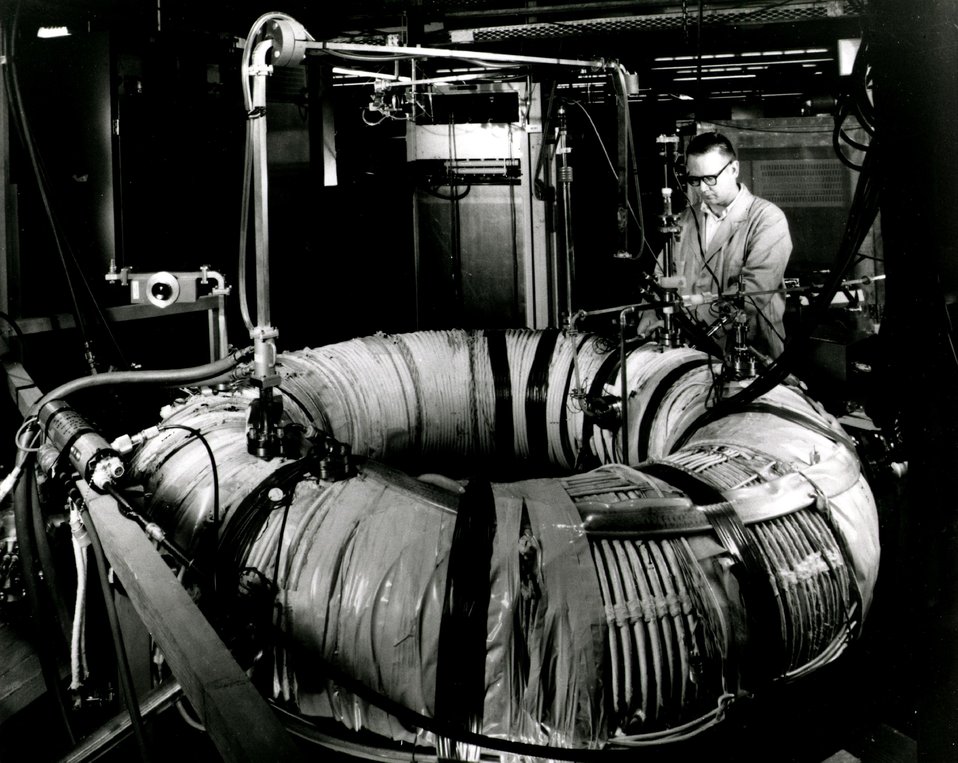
The principal experiment device used for studying toroidal confinement is the Levitron, which consists of a totoidal chamber with a heavy ring conductor suspended within the chamber as shown in the photo. Circa 1967.